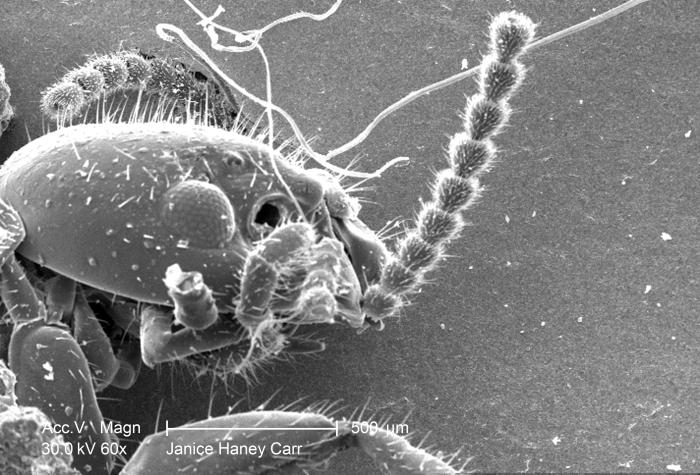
Under a low magnification of 60X, this scanning electron micrograph (SEM) revealed some of the ultrastructural morphology found on the head region of a termite, which had been discovered in the suburbs of Atlanta, Georgia.